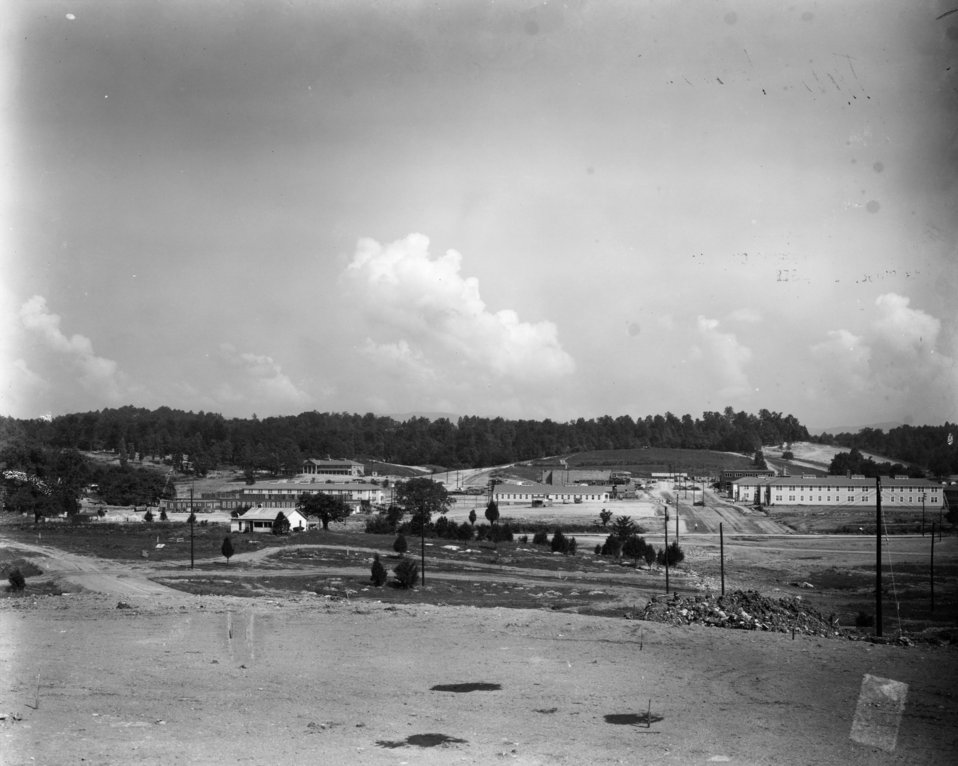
Construction activity at Oak Ridge